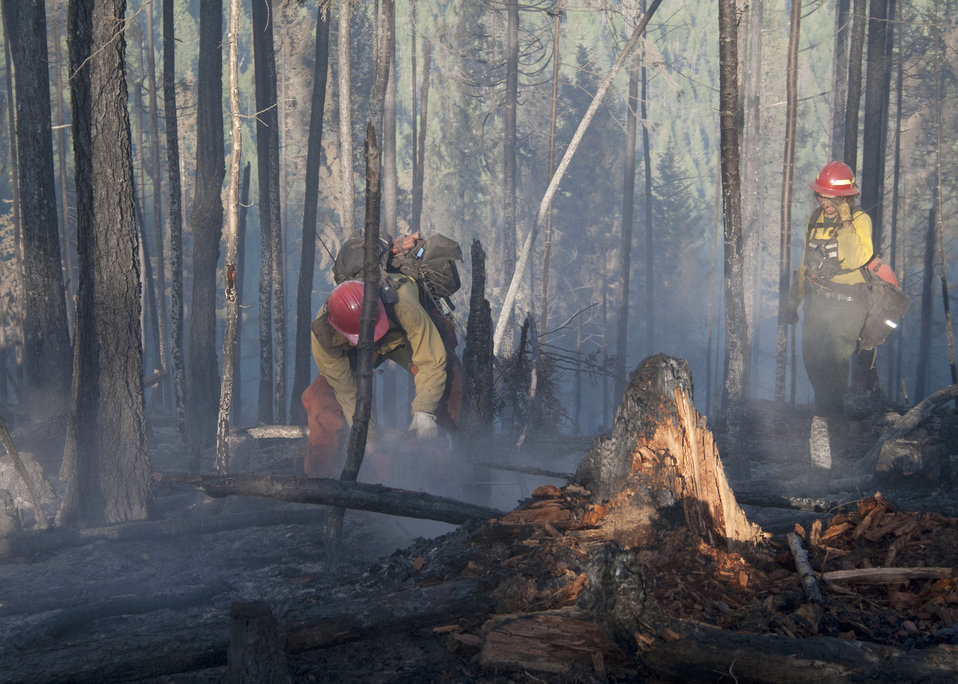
Firefighters supported by three fire engines, two helicopters, two water tenders, a dozer and an air tanker battled to contain the 90 acre Rogers Fire located on Mt. Rogers five miles west of Aladdin, WA on the Colville National Forest. Firefighters worked under adverse conditions with steep terrain and gusting winds to reduce the loss of timber and protect the Rogers Mountain Trail. The Rogers Fire began on Aug. 9, 2011 and was controlled by Aug. 19, 2011 with mop up crews ensuring that no flare-ups occurred. Colville National Forest has 1.1 million acres in northeastern Washington and includes the Kettle River, Selkirk Mountain ranges, and the upper reaches of the Columbia River.